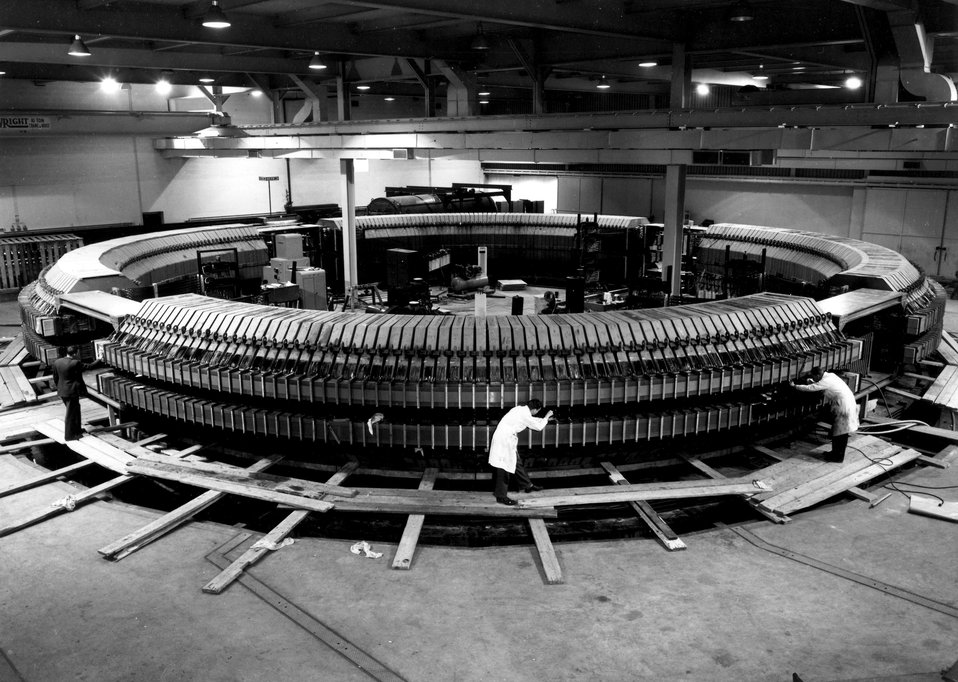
General view of Cosmotron showing final adjustments to installation of main coil.